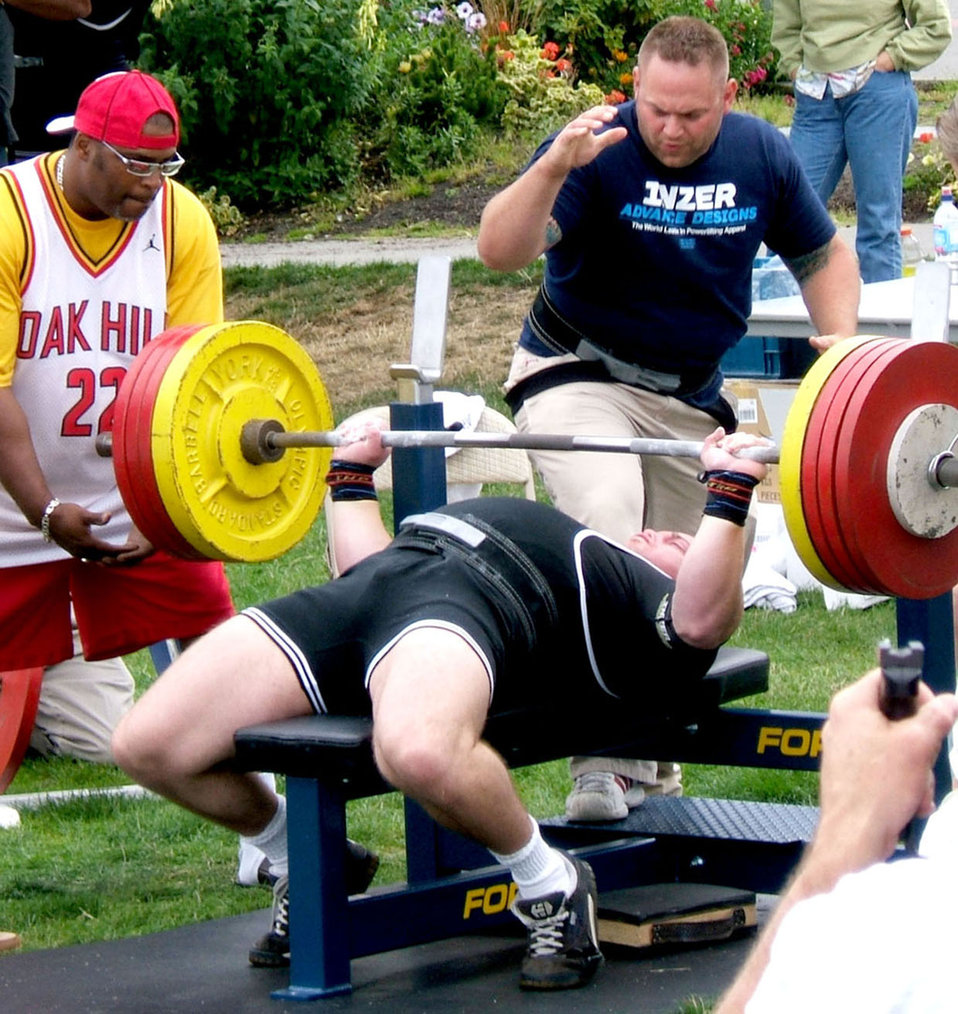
Heavy lifters

ALKI, Wash. (AFPN) -- Staff Sgt. Joe Gast keeps several spotters on their toes as he prepares for a bench press.